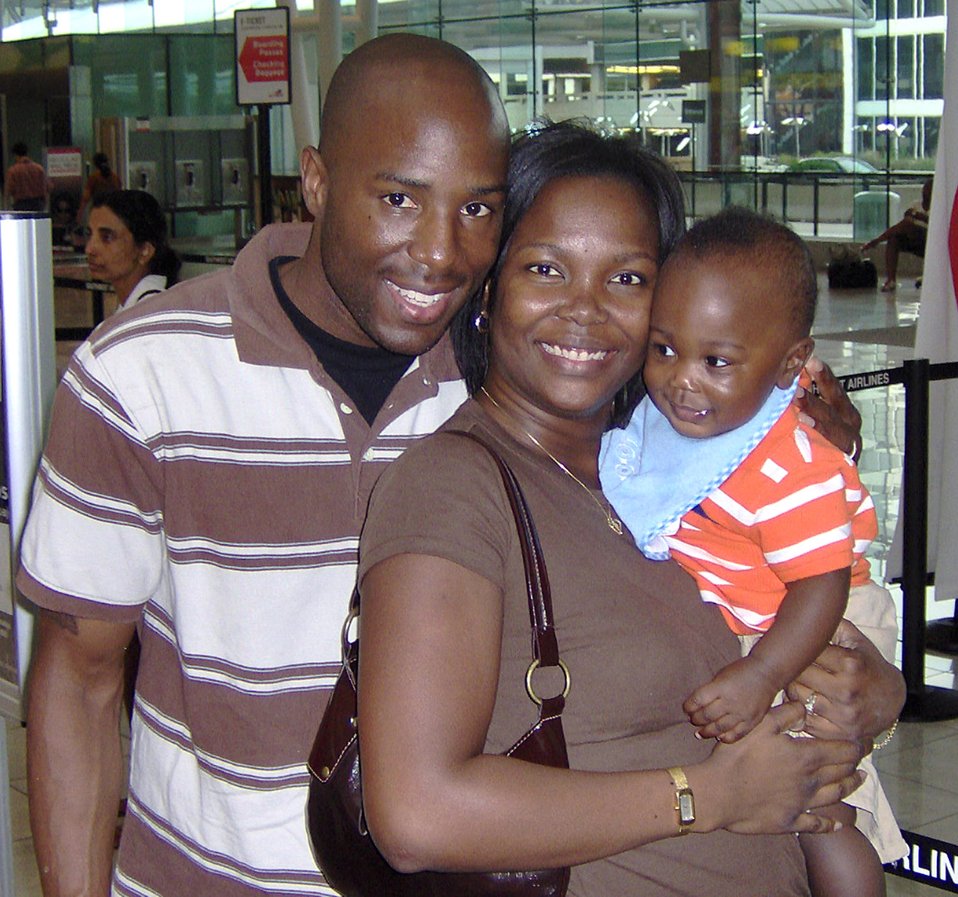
Fallen comrade

Capt. Kermit Evans was killed in an emergency helicopter landing Dec. 3 near the shore of Lake Qadisiyah in Al Anbar Province, Iraq. Captain Evans was one of 16 people aboard the Marine CH-46 helicopter and one of four servicemembers killed as a result of the landing. He is survived by his wife, Perneatha and 13-month-old son, Kermit Jr. Captain Evans was the commander of the 27th Civil Engineer Squadron Explosives Ordnance Disposal Flight at Cannon Air Force Base, N.M.